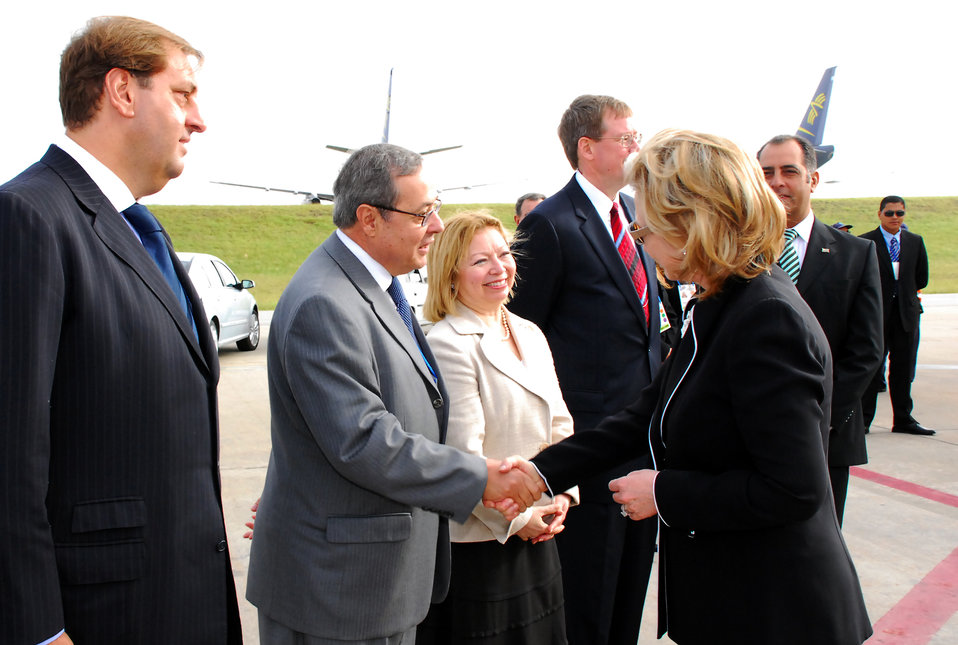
Secretary Clinton Arrives in Montevideo, Uruguay

U.S. Secretary of State Hillary Rodham Clinton is welcomed by officials as she arrives in Uruguay March 1, 2010.